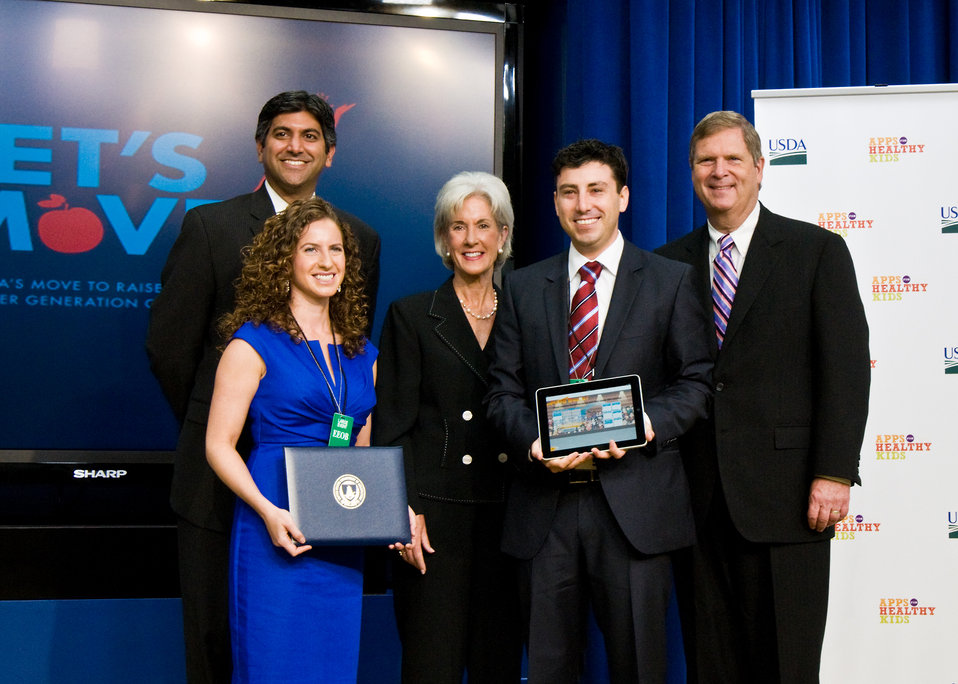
Aneesh Chopra, White House Chief Technology Officer, Health and Human Services Secretary Kathleen Sebelius and Agriculture Secretary Tom Vilsack present the Popular Choice Award to Aaron Coleman and Jesica Oratowski-Coleman, San Diego, California the developers of the game 'Food Buster,' winner of The Apps for Healthy Kids competition at the White House, in Washington, DC, on Wednesday, September 29, 2010. The Apps for Healthy Kids competition is part of First Lady Michelle Obama’s Let’s Move campaign to end childhood obesity within a generation. The competition challenges software developers, game designers, students and other innovators to develop fun and engaging software tools and games to urge children, especially “tweens” (children ages 9-12) – directly or through their parents – to eat better and be more physically active. 'Food Buster,' is a game show that asks you to carefully stack food items that do not break our scale. For each round, you will try to find foods with the fewest calories, least added sugar and least amounts of saturated fat. The fewer the calories, the more points you will get. USDA Photo 10di1506-140 by Bob Nichols.